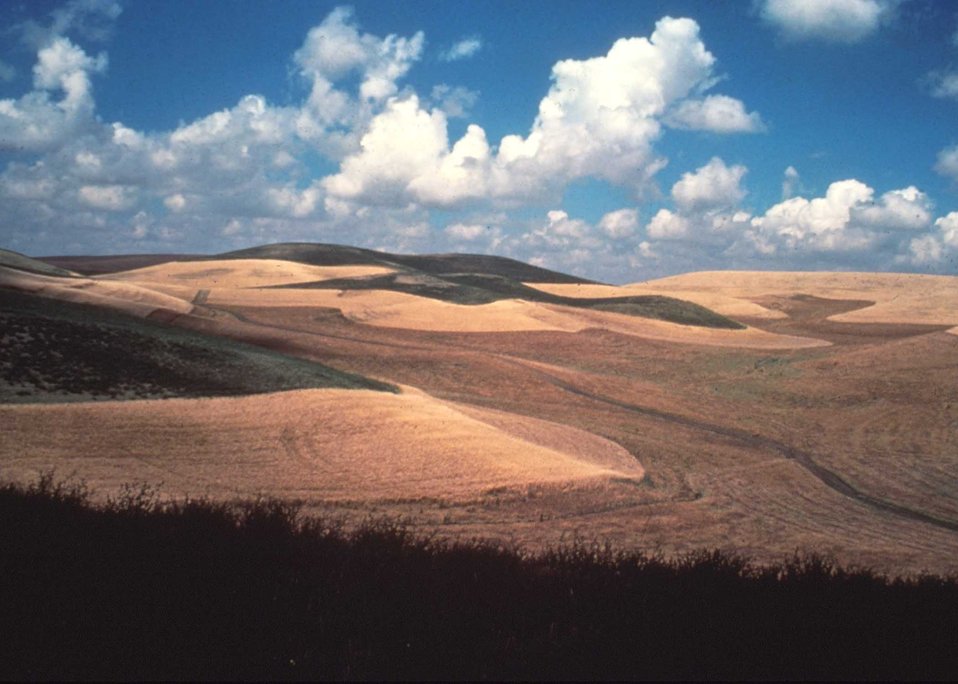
The Palouse region of northern Idaho is noted for production of wheat, barley and dry edible peas and lentils.